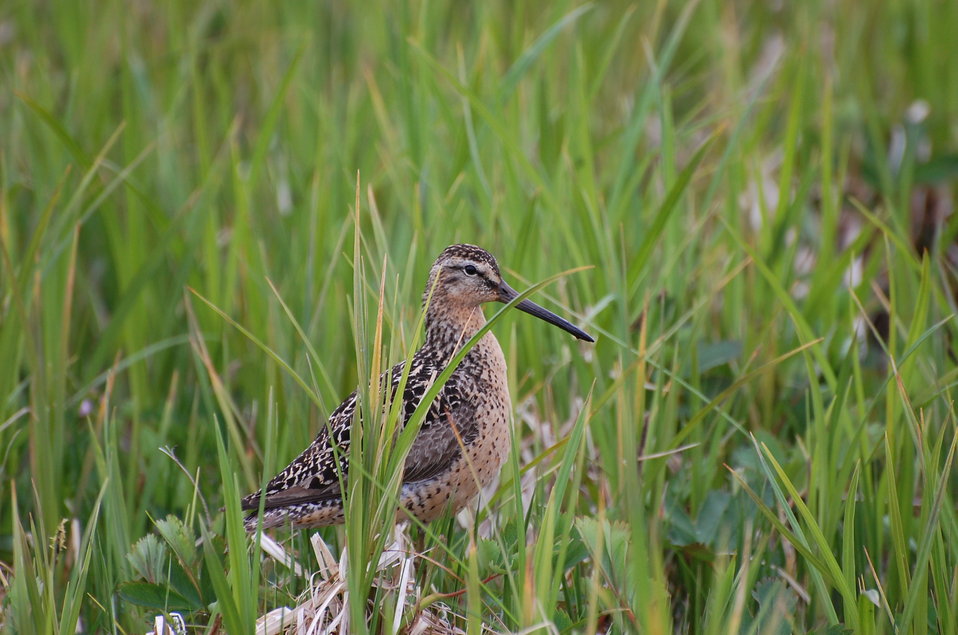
Short-billed Dowitcher

Izembek National Wildlife Refuge
Photo by Kristine Sowl,
USFWS, Public Domain